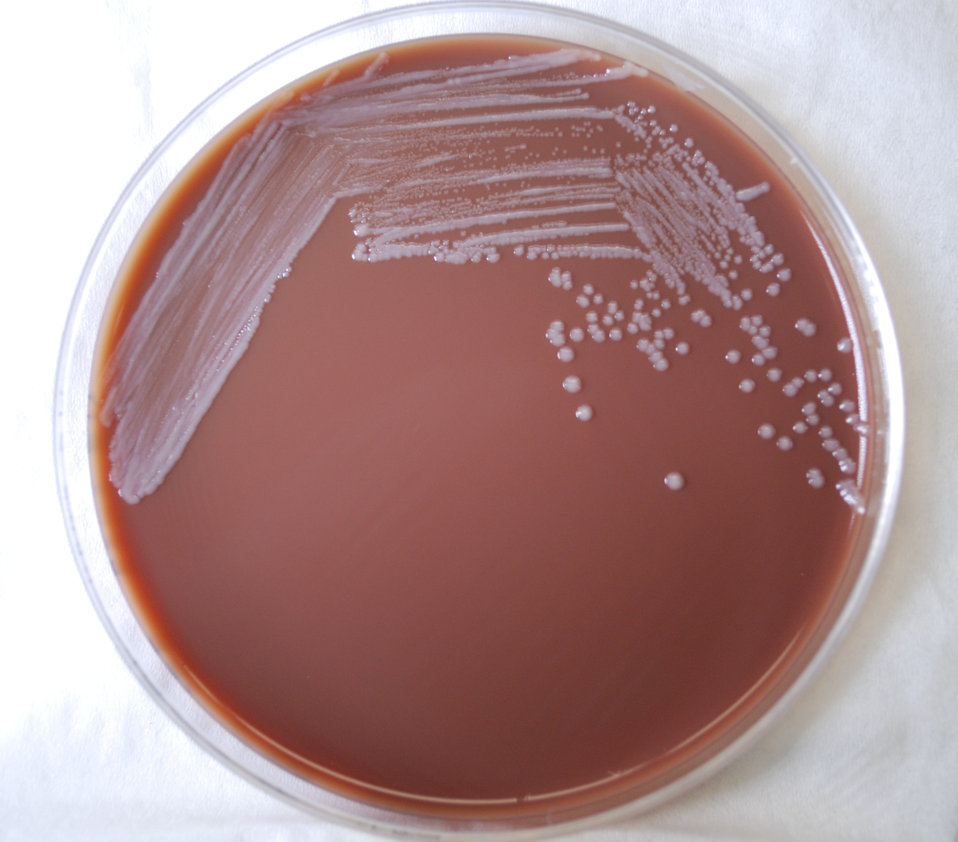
This photograph depicts the colonial morphology displayed by Gram-negative Yersinia pestis bacteria, which had been grown on a medium of chocolate agar, for a 72 hour time period, at room temperature. Y. pestis is the bacterium responsible for causing the infectious disease known as plague. For a closer view of these bacterial colonies, see PHIL 12268.